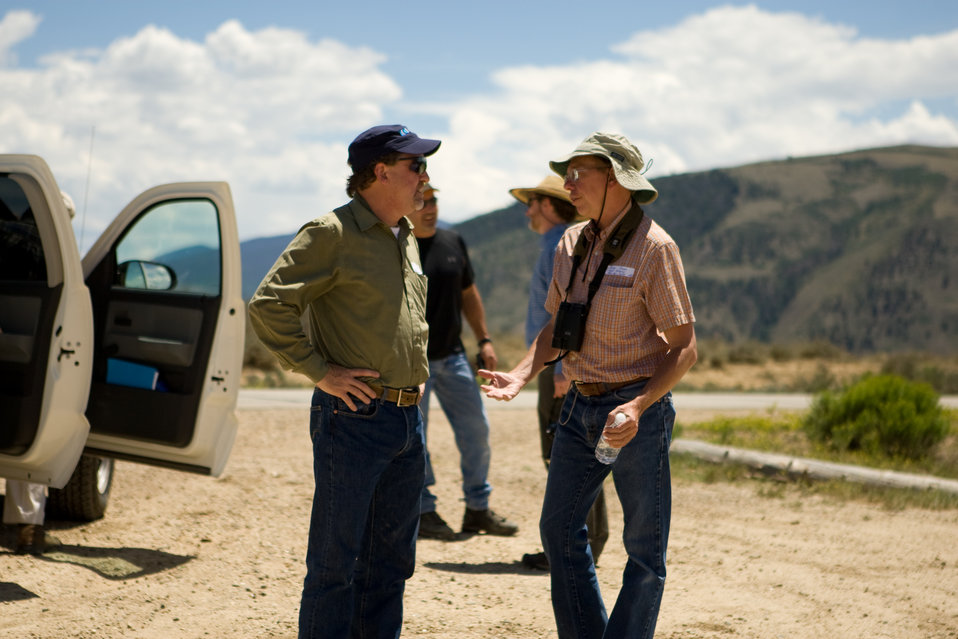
Colorado Rare Plant Conservation Initiative

The Colorado Rare Plant Conservation Initiative (RPCI) is a partnership of 23 statewide and regional agencies, private organizations, and academic institutions working to conserve 121 rare plants in Colorado. As part of these efforts the group developed the Colorado Rare Plant Conservation Strategy, developed Best Management Practices to reduce energy development impacts, addressed climate change, and developed focused strategies for the conservation of individual species at eight priority landscapes. The group has also worked to coordinate volunteer efforts for plant conservation across the state.